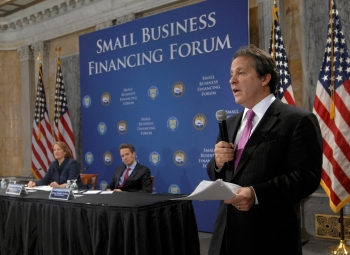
Treasury and SBA Host a Small Business Financing Forum

Counselor to the Secretary Gene Sperling moderated the closing discussion, following breakout sessions, to outline the ideas shared throughout the day.